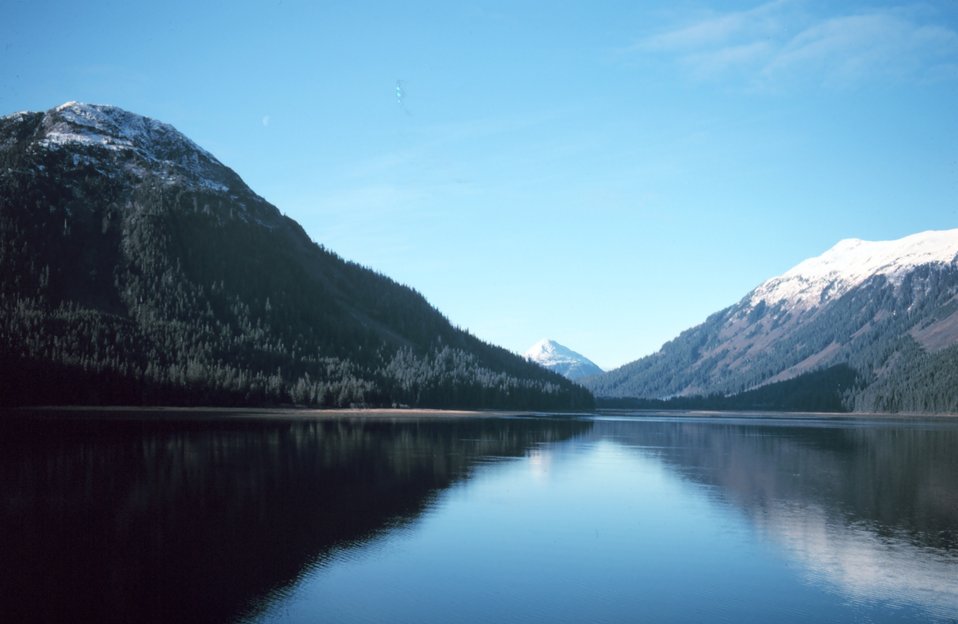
View to the west from The Portage at the headwaters of Tenakee Inlet.